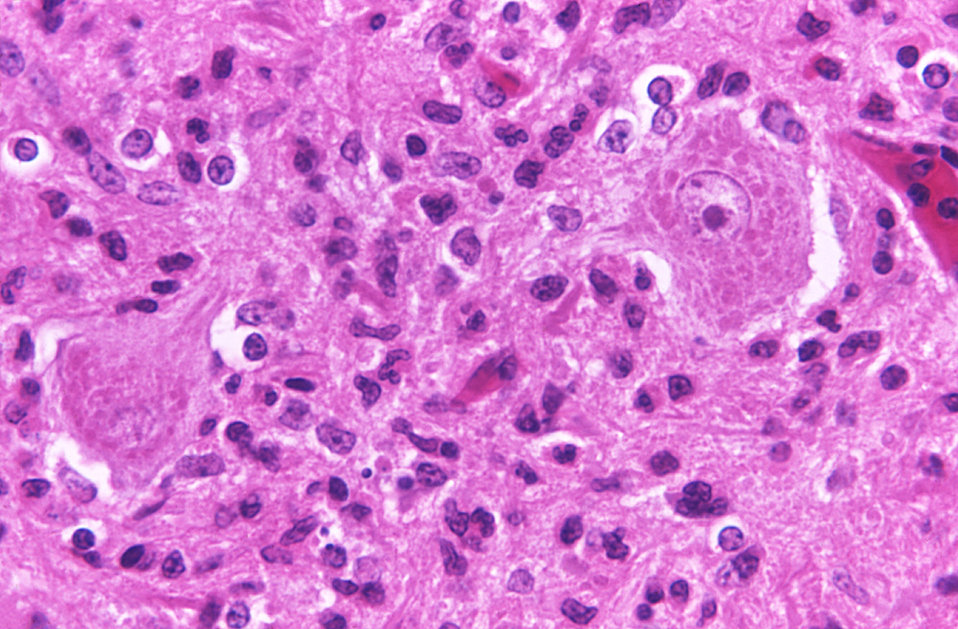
Photomicrograph of H&E stained brain tissue from a rabies encephalitis patient.